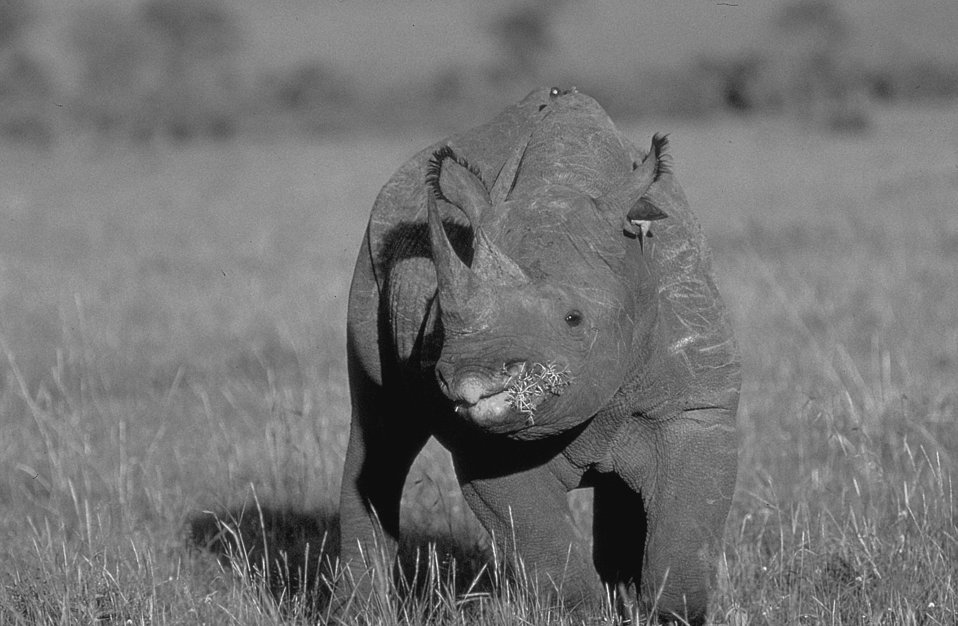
Young male black rhino

Maasai-Mara Game Reserve, Kenya